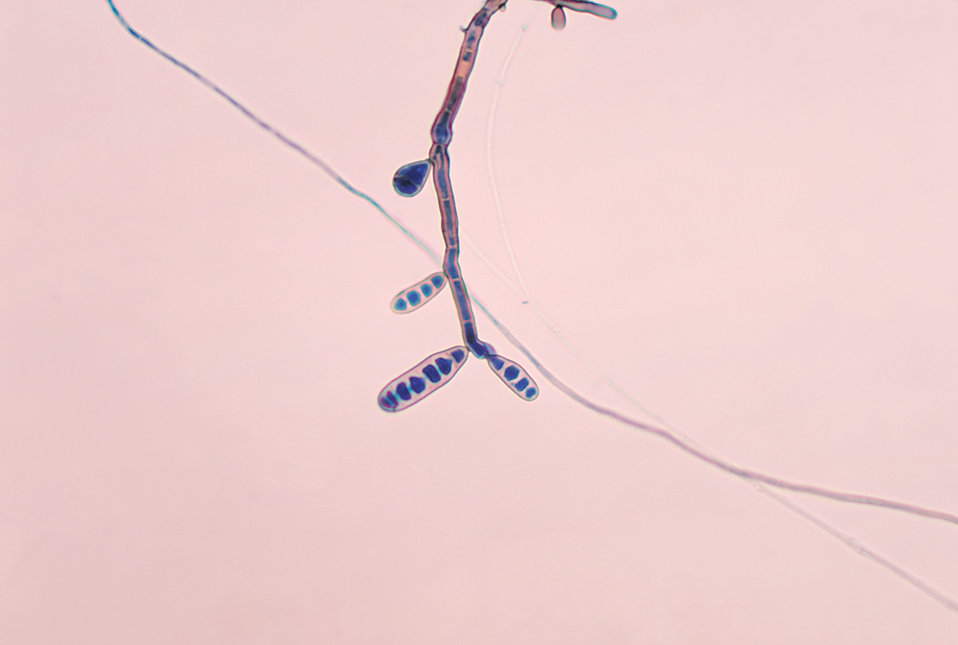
This image demonstrates the fine branching tubes of Exserohilum rostratum.